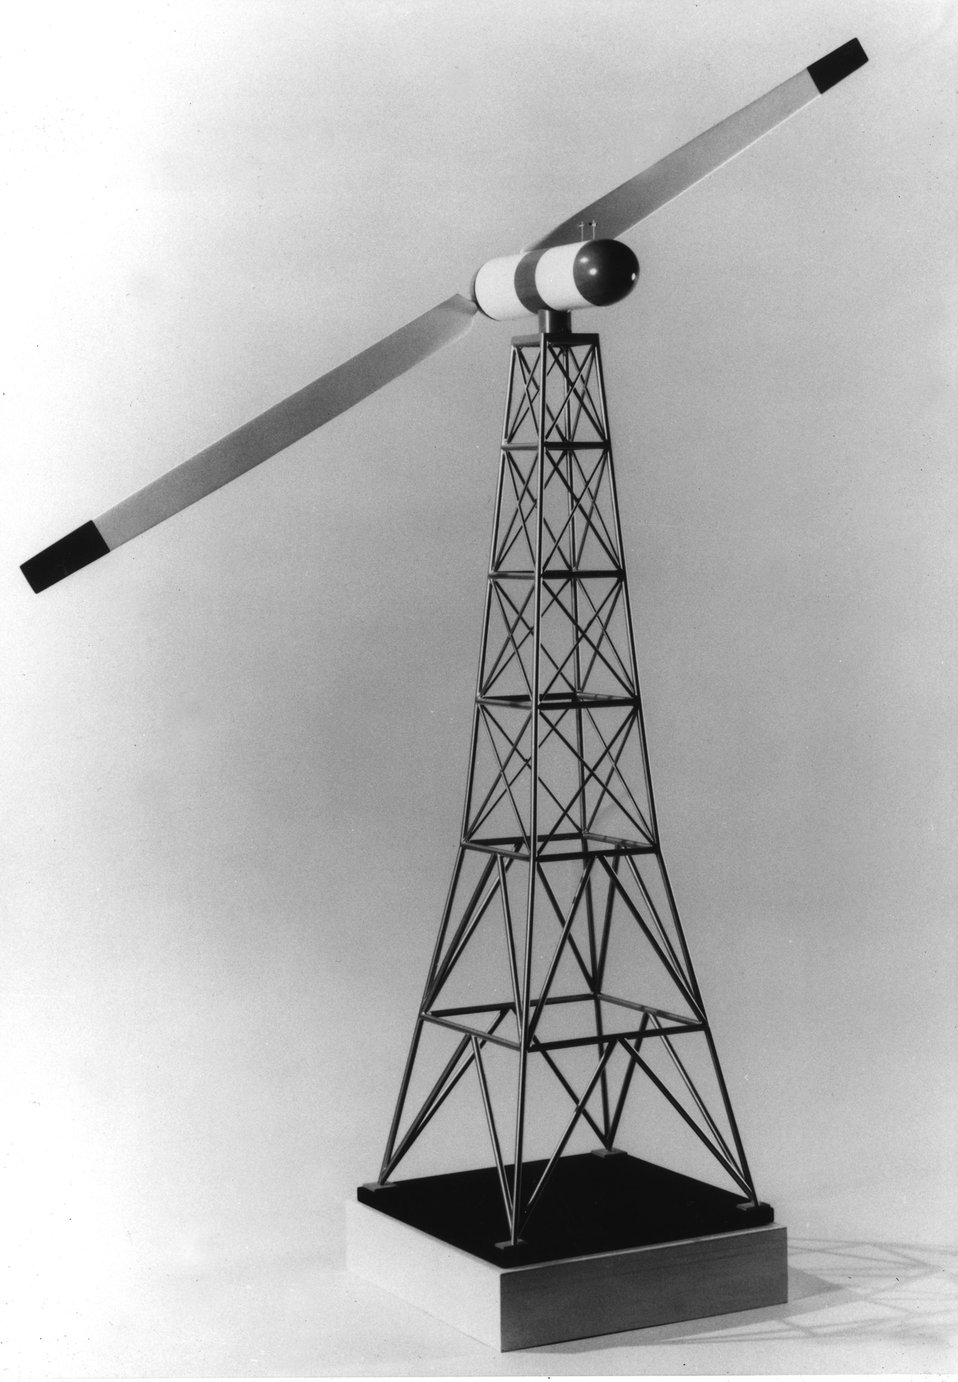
A 125-foot-tall windmill, as depicted by this model, is being developed for the Energy Research and Development Administration (ERDA) by NASA's Lewis Research Center in Cleveland, Ohio. c. 1975